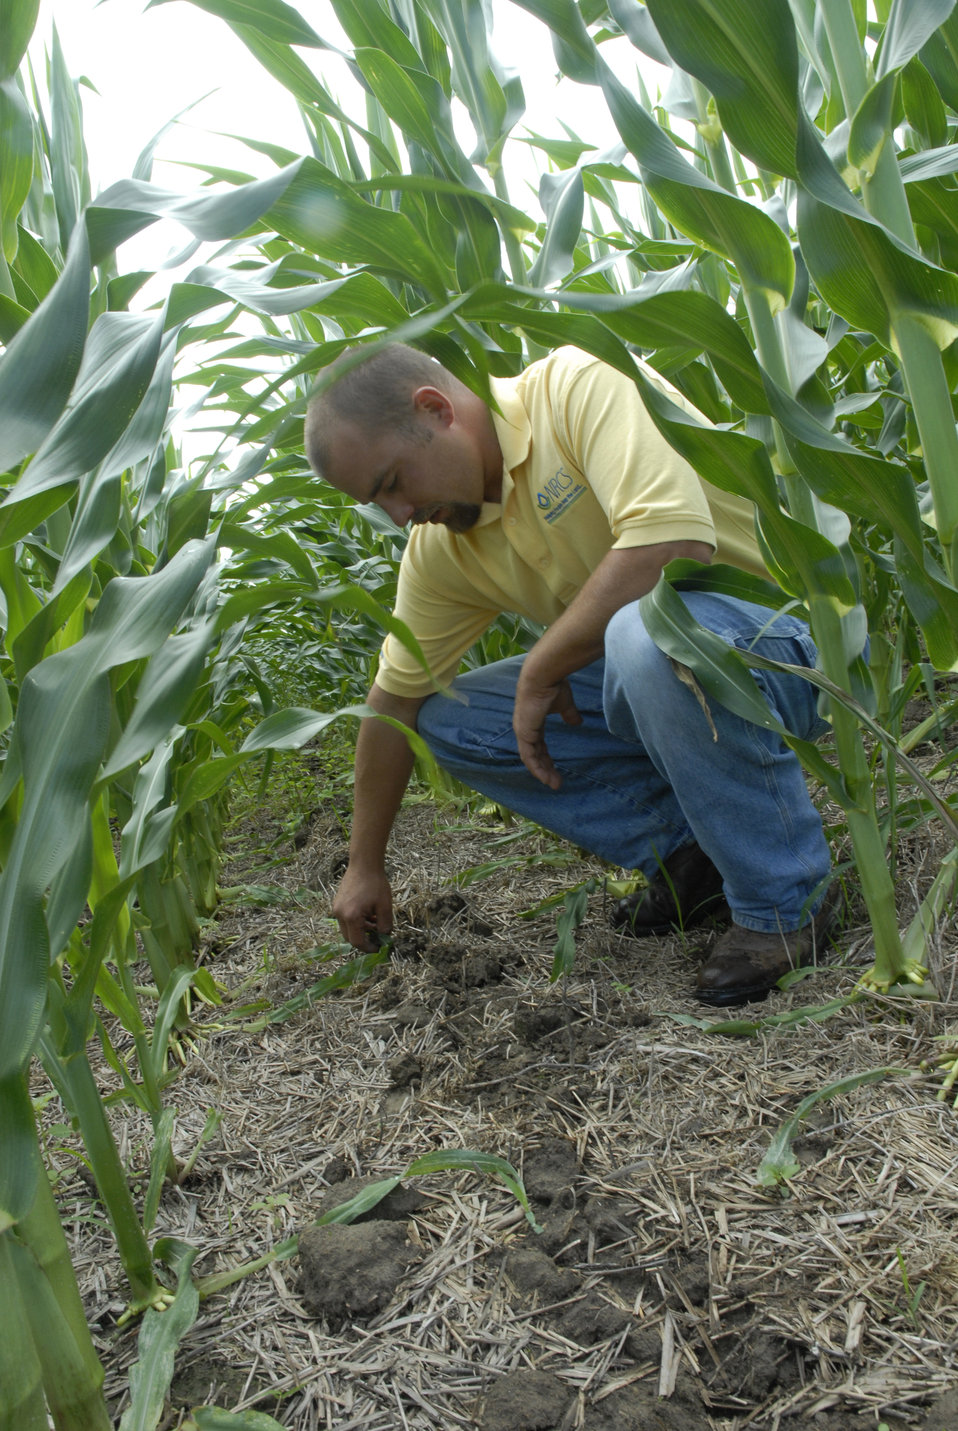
A U.S. Department of Agriculture (USDA) Natural Resources Conservation Service (NRCS) employee examines soil on farm in Delaware on July 7, 2008 as part of the Conservation Effects Assessment Project (CEAP) study of the Chesapeake Bay region. USDA NRCS says that good conservation practices are playing a major role in cleaning up the Chesapeake Bay as the government and farm groups continue their debate on how to reduce nutrient and sediment runoff into the massive watershed.